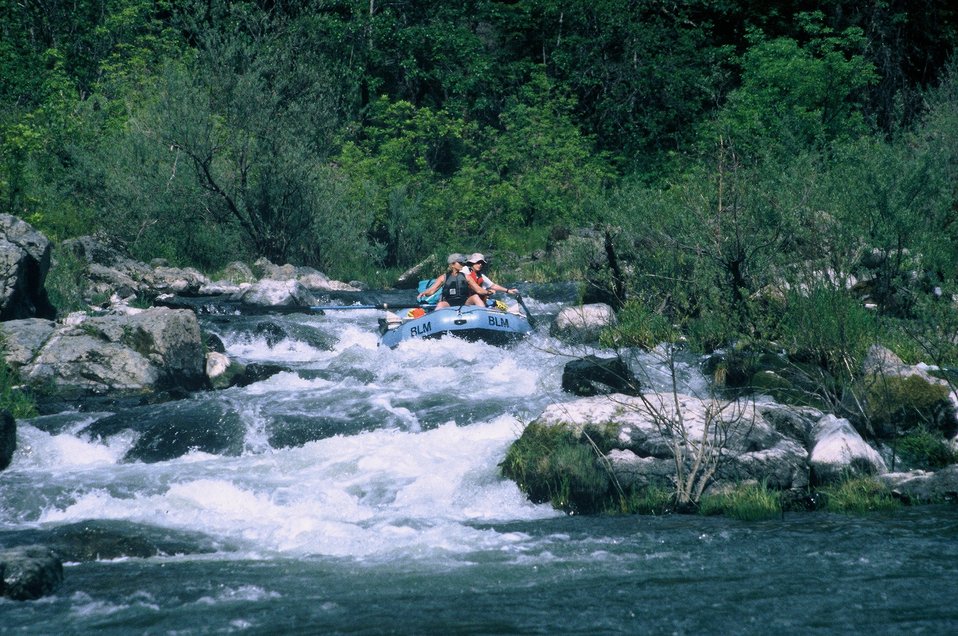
Rainie Falls Fish Ladder Wild section of the Rogue River from Grave Creek to Foster Bar. 3100 cfs at Grants Pass and 5300 at Agness.